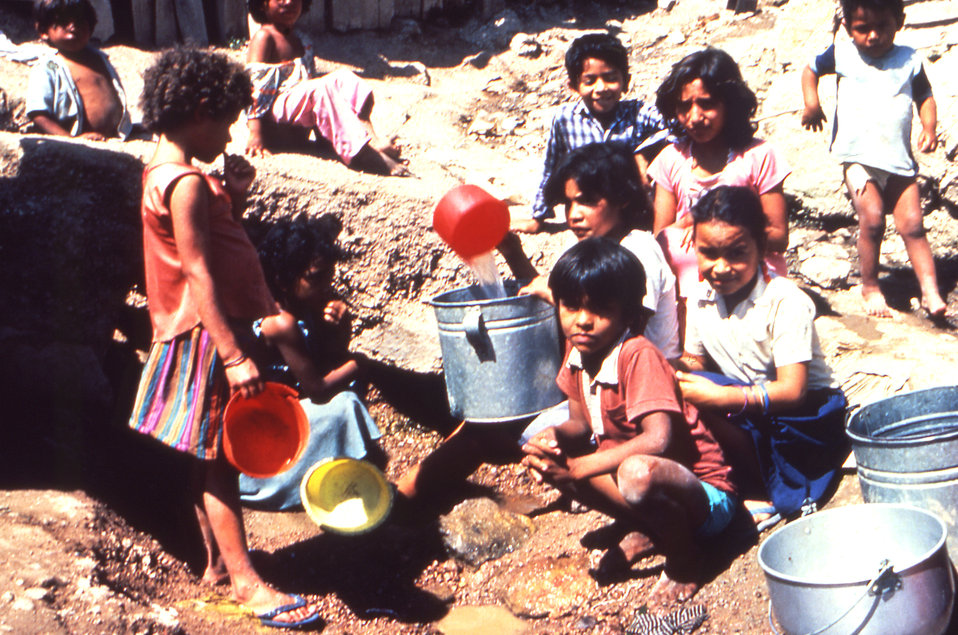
In this particular picture, a number of Latin-American children are seen playing in a water run-off zone on the outskirts of a rural town, which is a prime area for an unimmunized child to acquire the poliovirus.